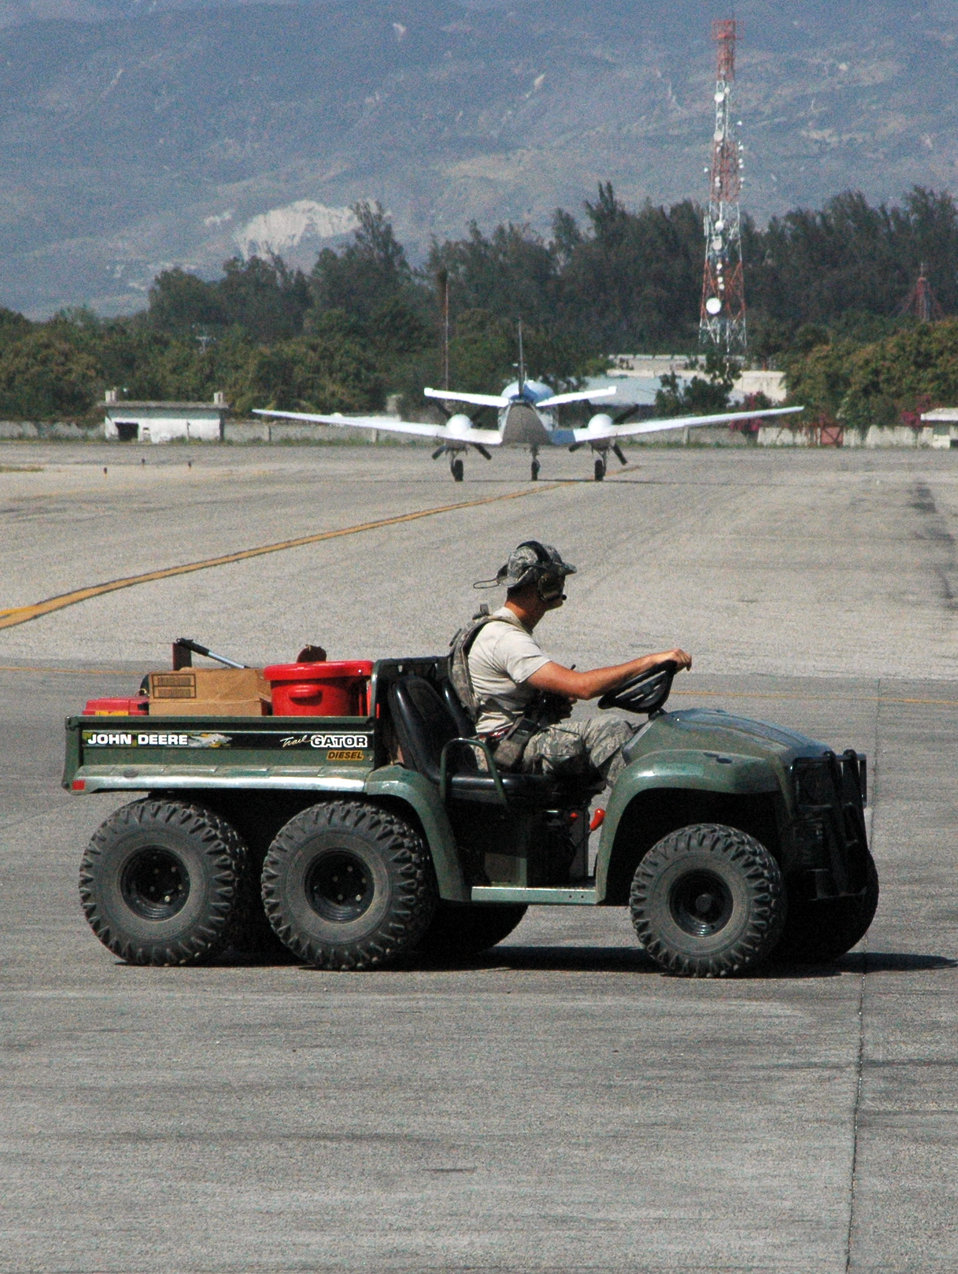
Airmen continue relief aid flights into Haiti

Air Force aerial transporters race across the flightline Jan. 30, 2010, at Toussaint L'Ouverture International Airport in Port-au-Prince, Haiti. Aerial transporters there are on 24-hour operations, supporting the more than 130 military and commercial aircraft from the U.S. and other countries arriving in Haiti daily providing relief support.